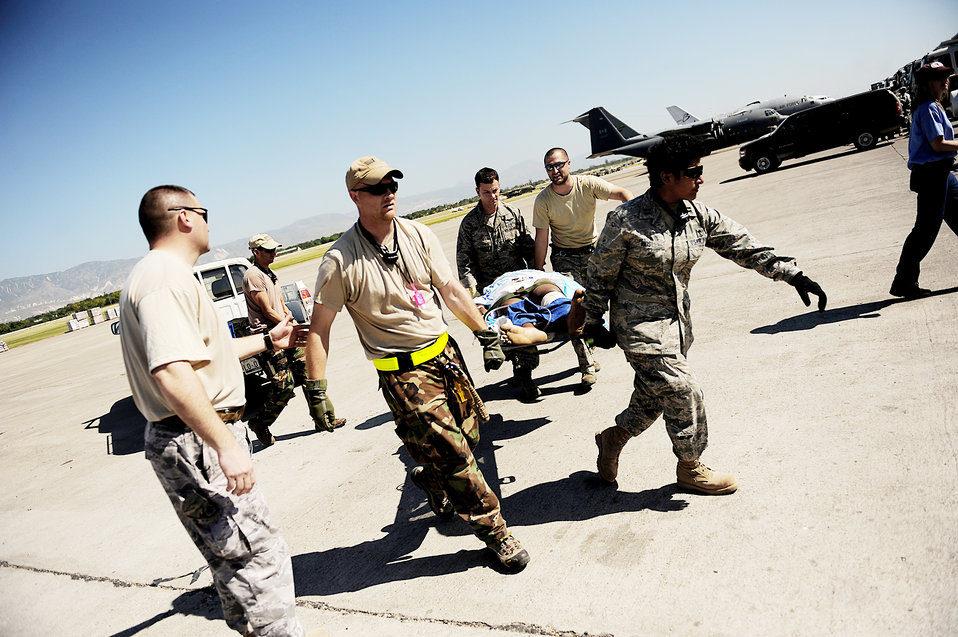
Hurlburt Field medics continue to save lives in Haiti

Master Sgt. Douglas Brook and Tech. Sgt. Nicholas Wentworth carry an injured Haitian man at Troussaint L'Ouverture International Airport Jan. 18, 2010, in Port-au-Prince, Haiti. Both Airmen are medics in Haiti as part of the U.S. respone to the 7.0 magnitude earthquake that struck the country Jan. 12. Sergeants Brook and Wentworth are both assigned to the 1st Special Operations Support Squadron.